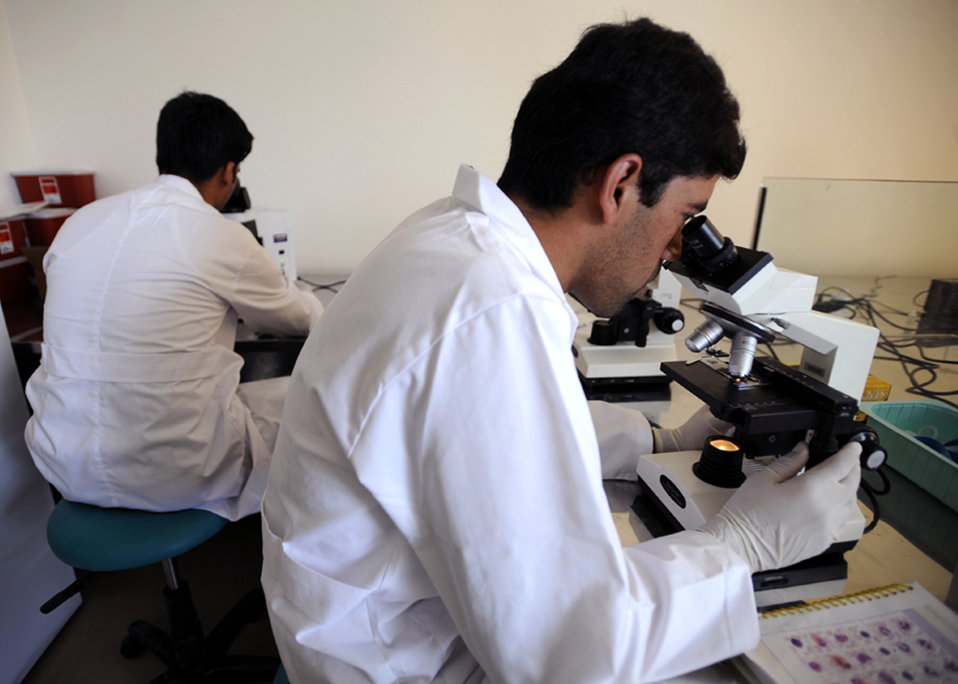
Afghan medical technicians learn lab techniques

Afghan medical students practice laboratory techniques Aug. 3, 2009 at the Kabul national military hospital in Kabul, Afghanistan.